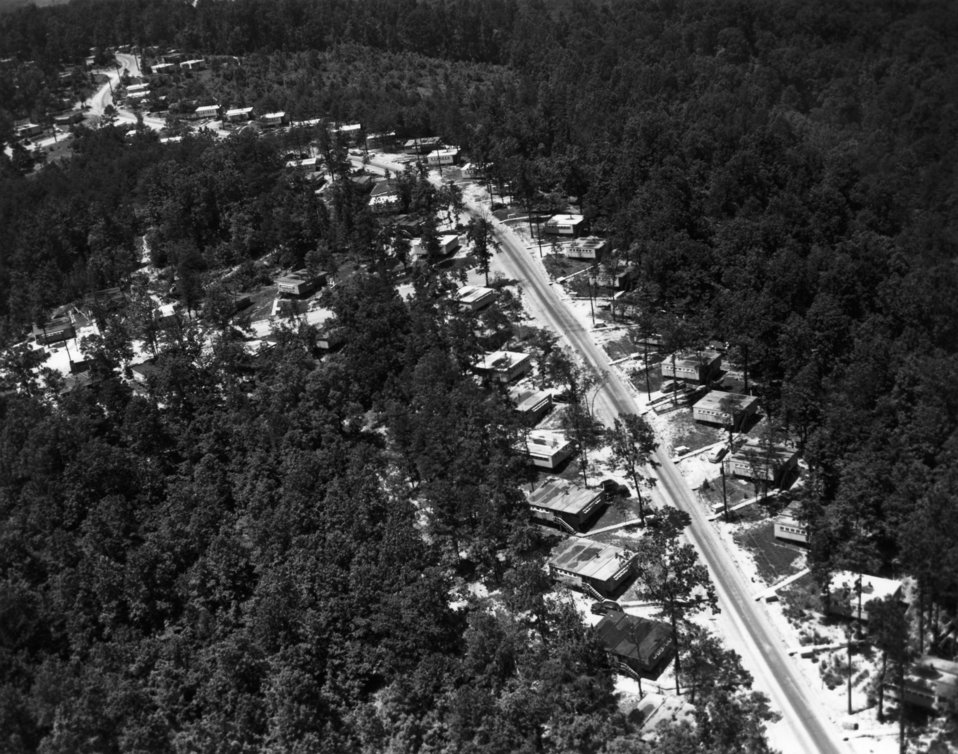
Aerial of Oak Ridge